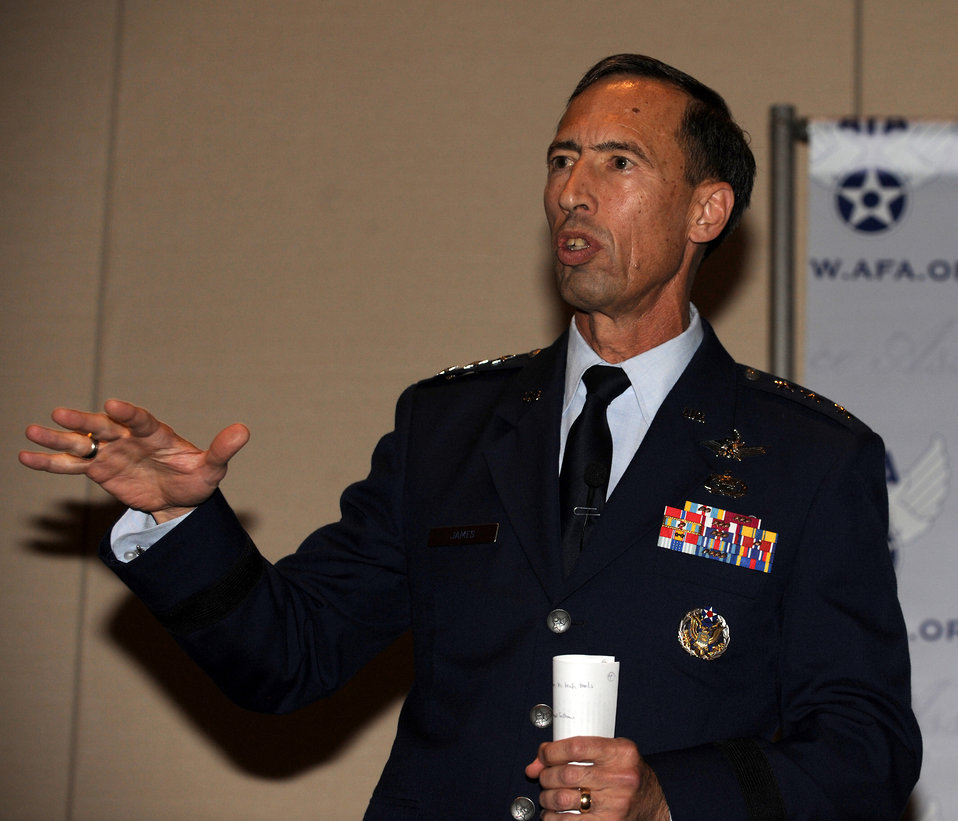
ISR chief at AFA convention

Lt. Gen. Larry D. James is the Deputy Chief of Staff for Intelligence, Surveillance and Reconnaissance. James spoke to attendees at the annual Air Force Association's Air and Space Conference and Technology , Exposition in Washington, D.C., on September 17, 2012.